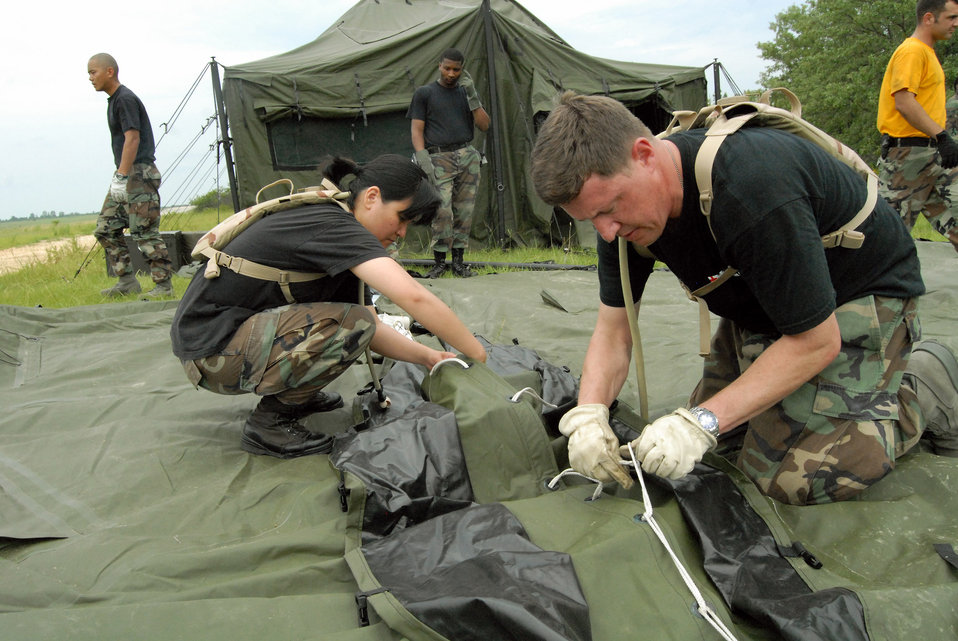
Pope's AES trains Travis Airmen for deployment

Maj. Maryann Marquez and Master Sgt. Benjamin Kratzer construct a second tent as part of their training with 43rd Aeromedical Evacuation Squadron at Pope Air Force Base, N.C., July 8. The week-long training gave the Airmen from 60th Medical Group at Travis AFB, Calif., the experience as part of a mobile aeromedical staging facility before they deploy. Major Marquez is and Sergeant Kratzer are assigned to the 60th Medical Support Squadron at Travis Air Force Base, Calif.